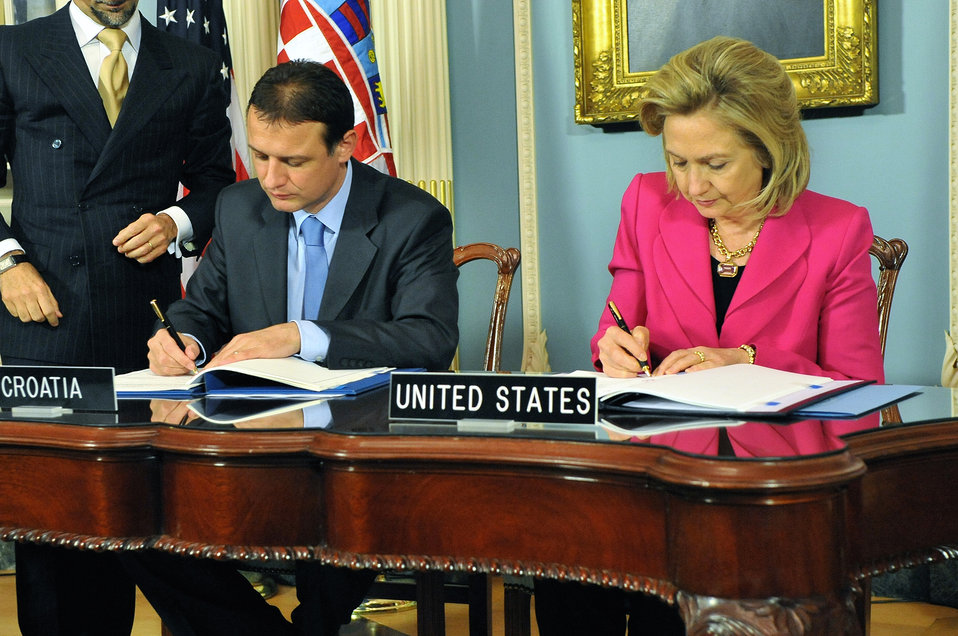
Secretary Clinton and Croatian Foreign Minister Jandrokovic Sign an Open Skies Agreement

U.S. Secretary of State Hillary Rodham Clinton and Croatian Foreign Minister Jandrokovic sign an Open Skies air services agreement at the U.S. Department of State in Washington, D.C., on January 3, 2011.